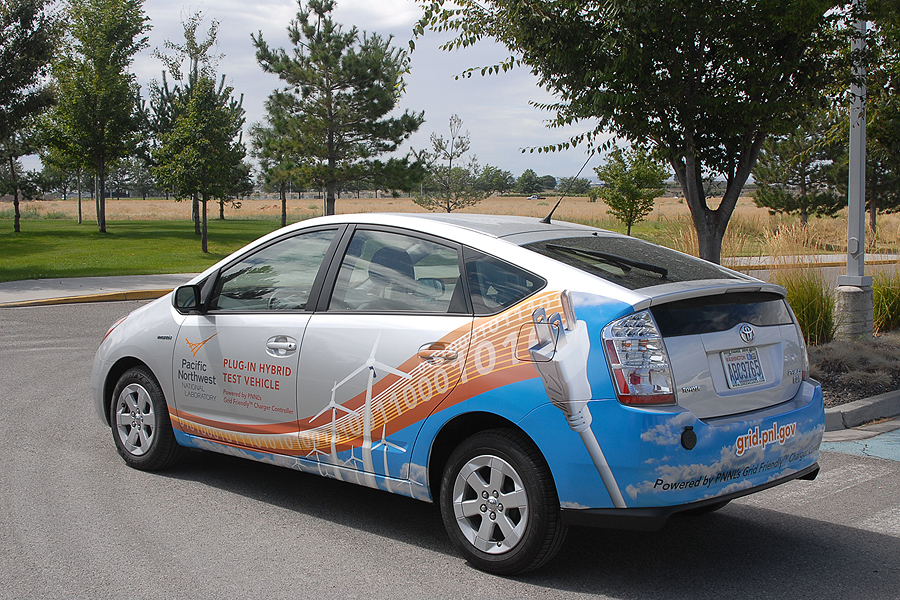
Pacific Northwest National Laboratory plug-in hybrid test vehicle.

A new PNNL report finds that the Northwest Power system would be able to balance 10 Gigawatts of addiitonal wind power if 2.1 million vehicles, or 13% of the Nortwest's fleet, were electric.